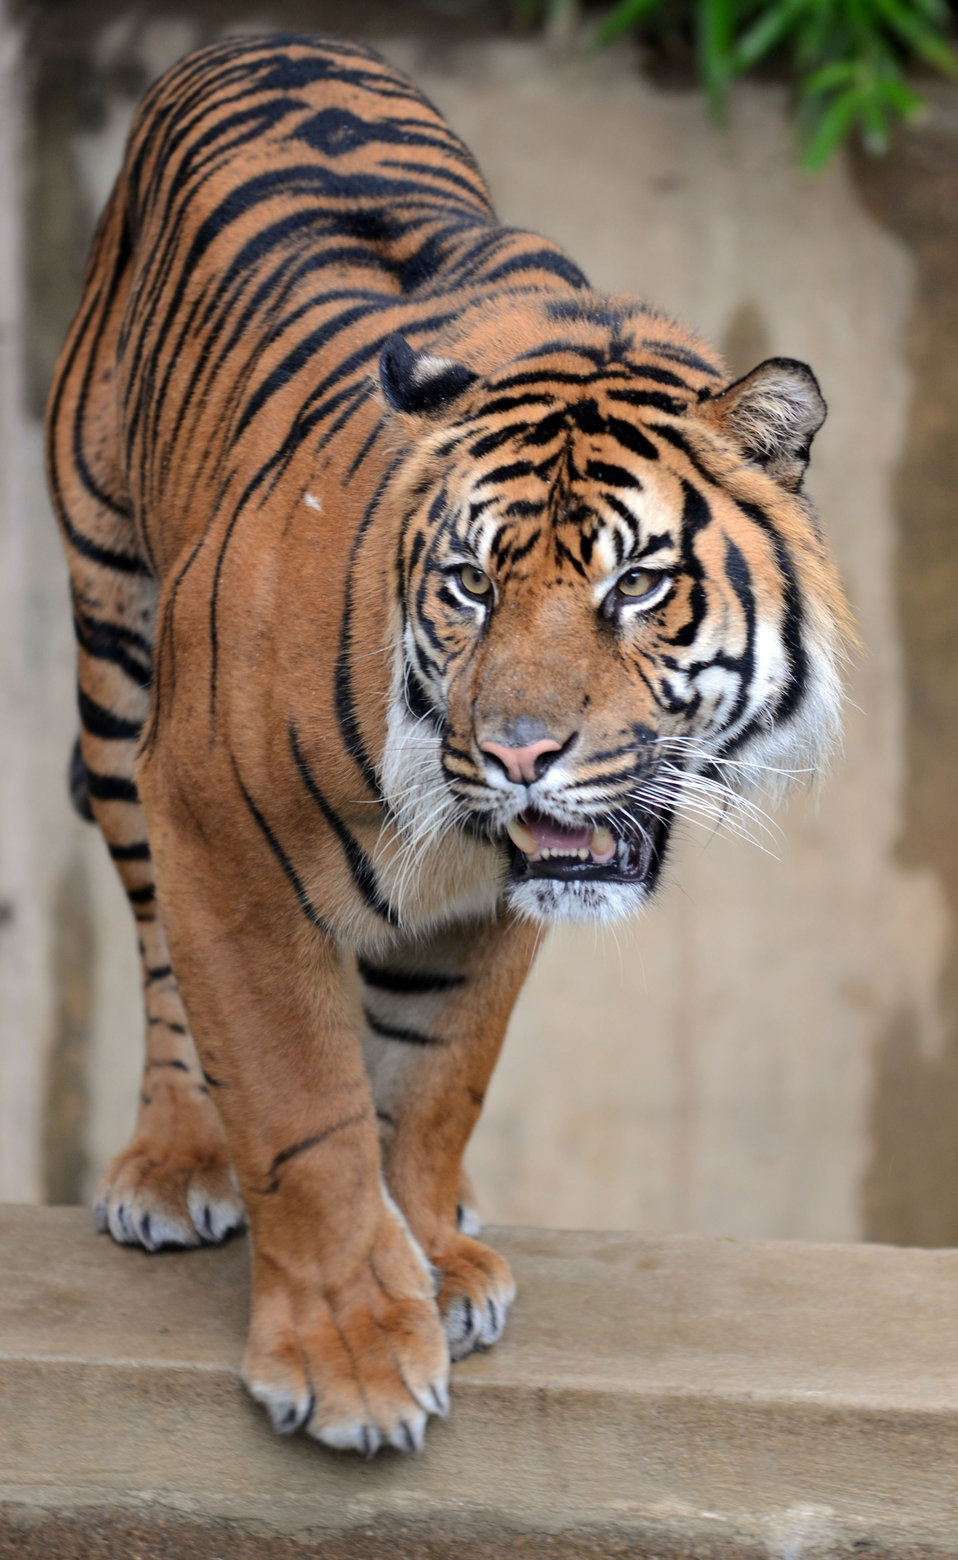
Save Vanishing Species Stamp First Day of Issue